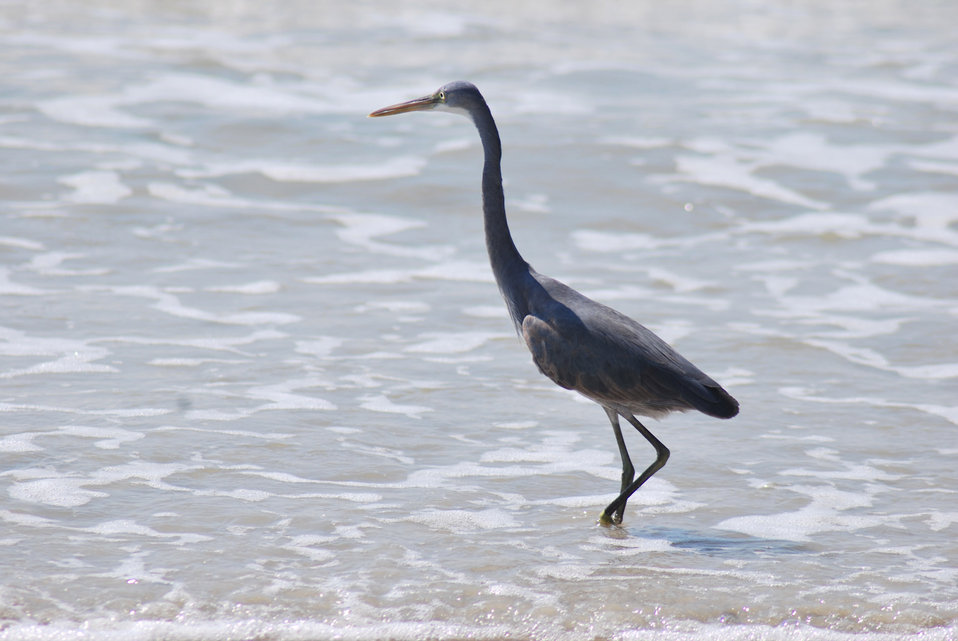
Goa beach bird

Bird fishing at benaulim beach, goa.